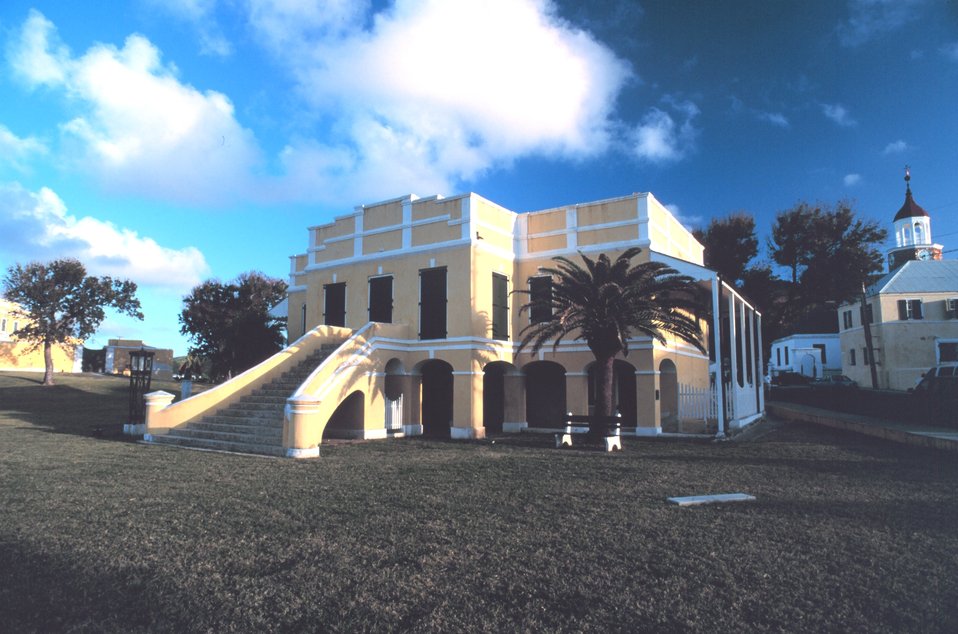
The old Danish Customs House in downtown Christiansted, now maintained by the National Park Service.